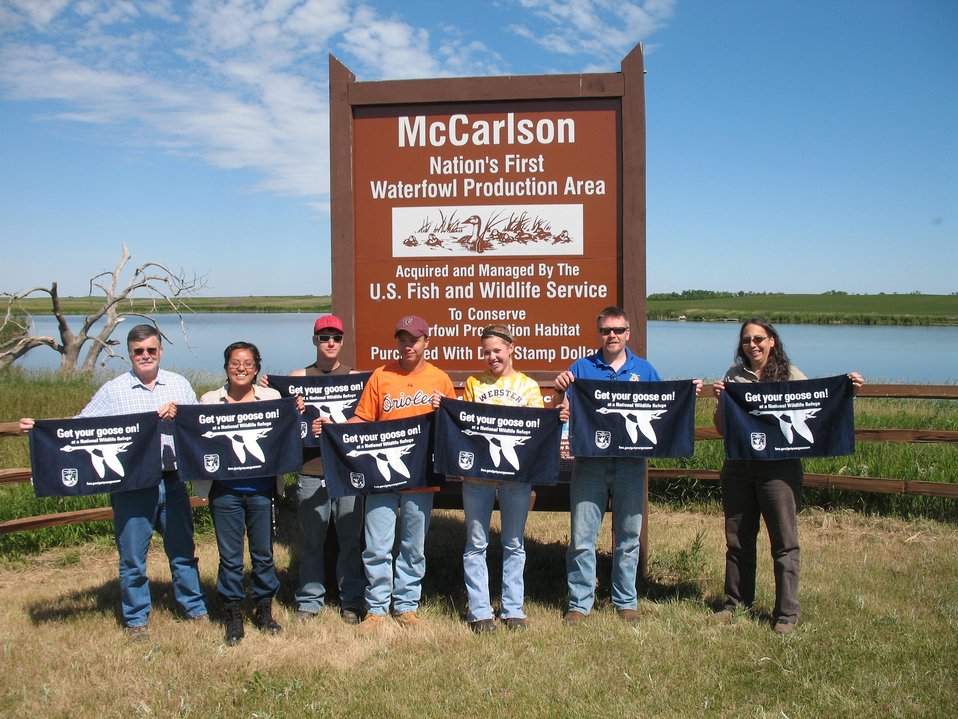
Get Your Goose On!

Photo taken at the McCarlson Waterfowl Production Area in the Waubay National Wildlife Refuge and Wetland Management District.

In this photo, left to right: Bernie Petersen; Kara Curley - SCA Tribal Intern; Preston Barse - YCC; David Rudebusch - YCC; Courtney Somsen - YCC; Matt Hogan - USFWS; Connie Mueller - USFWS Project Leader.